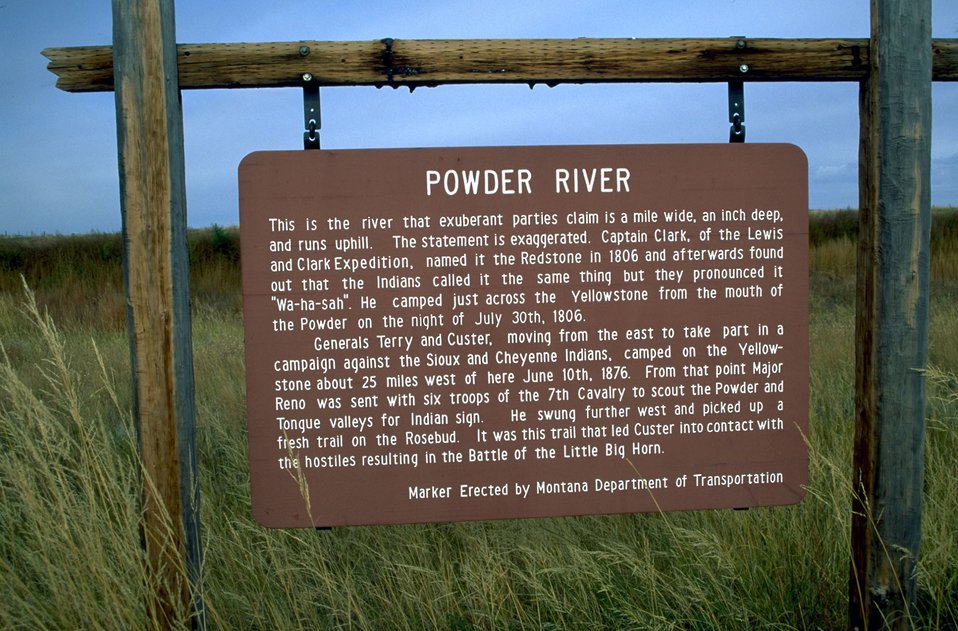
Powder River historic sign